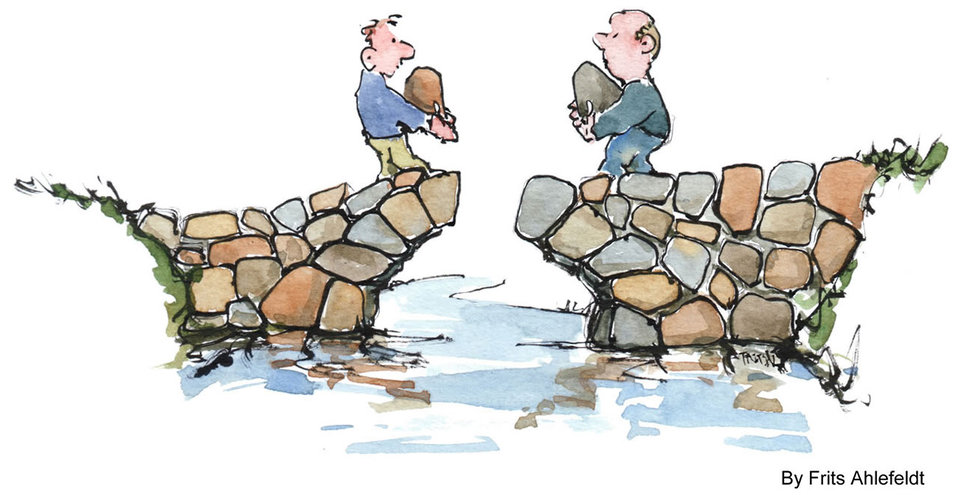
Building bridges

Creating solutions.